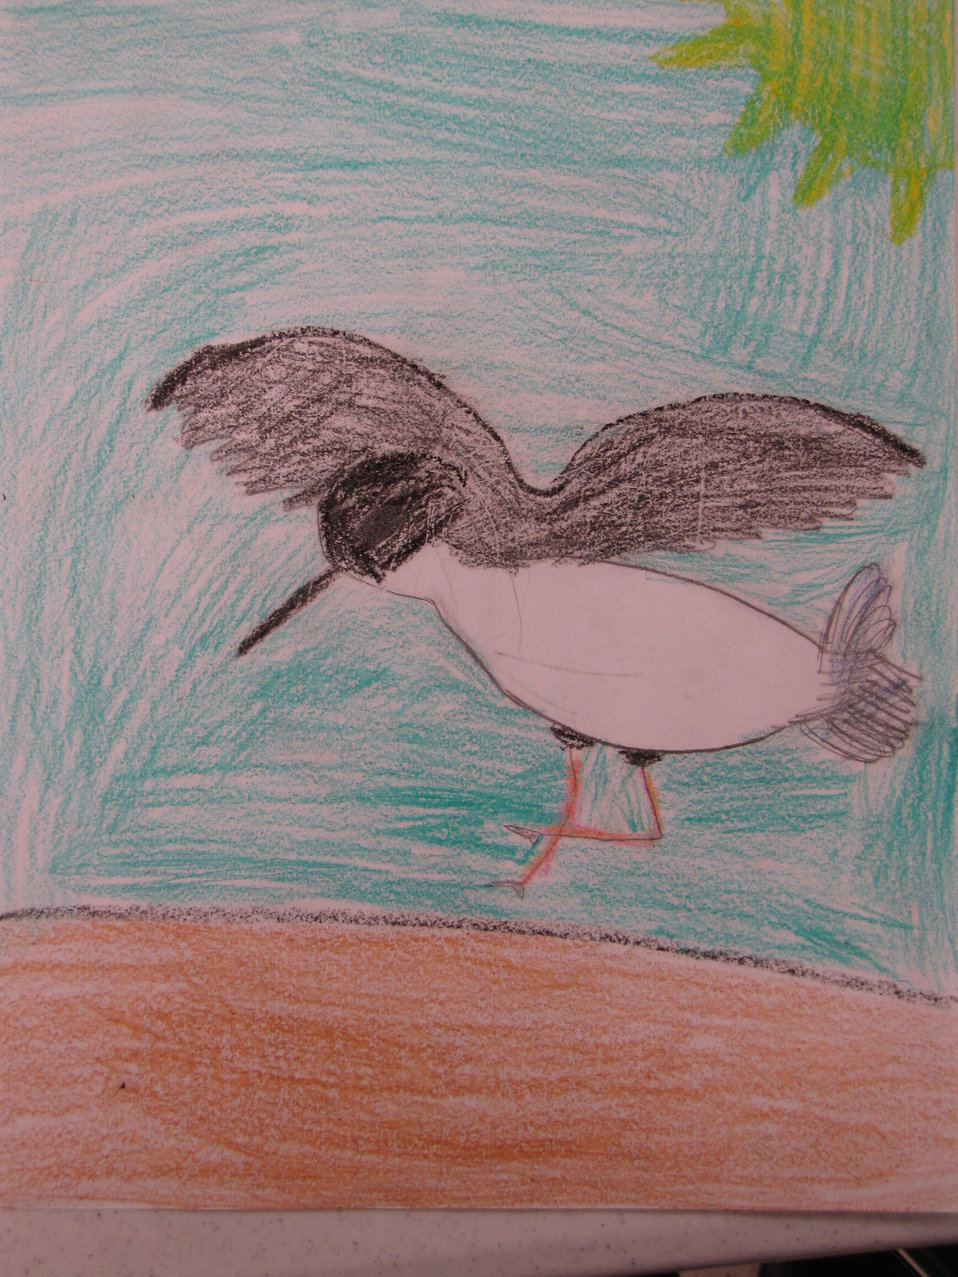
Black-necked stilt, by Brynley Sampson - 3rd grade. One of the class winners for the annual Bird Banner competition. Community school kids draw and color migratory birds and 90 of the winners from over 1000 entries are turned into poster-sized banners to hang down main street of Brigham City this summer.